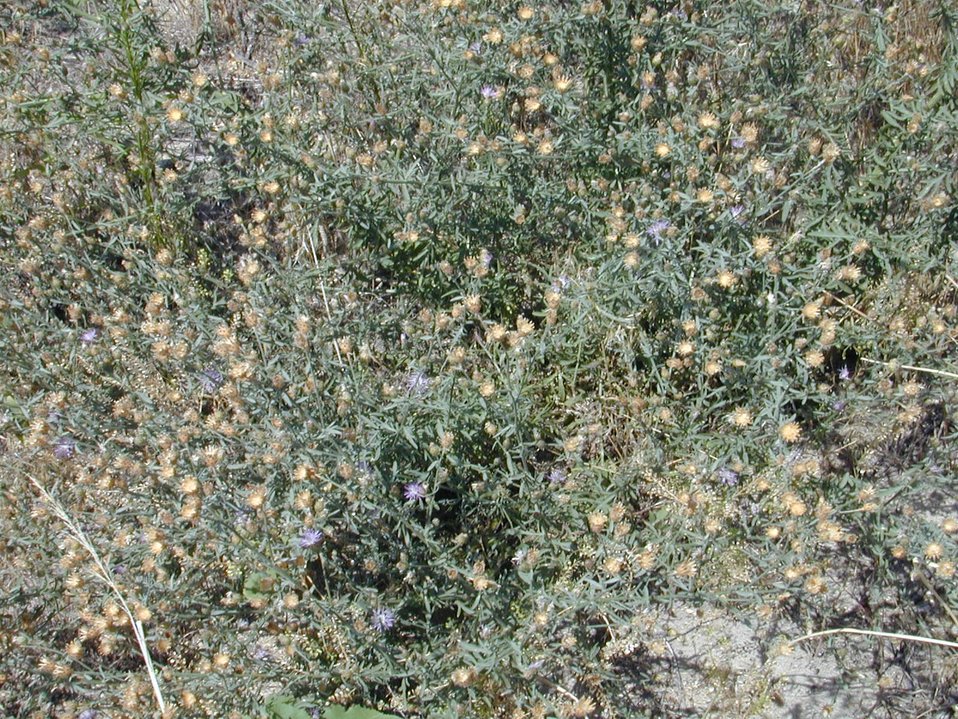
Spotted Knapweed Cottonwood Field Office UCSC